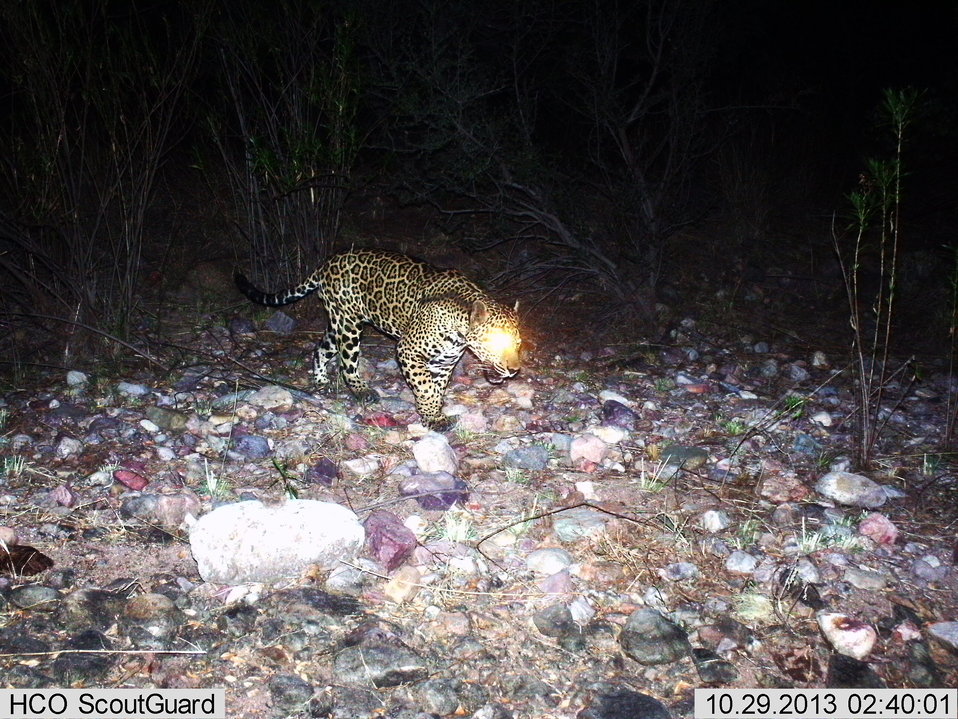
Male jaguar photographed by automatic wildlife cameras in the Santa Rita Mountains on October 29, 2013, as part of a U.S. Fish and Wildlife Service/Department of Homeland Security-funded jaguar survey conducted by University of Arizona. The jaguar has been photographed previously at this location.